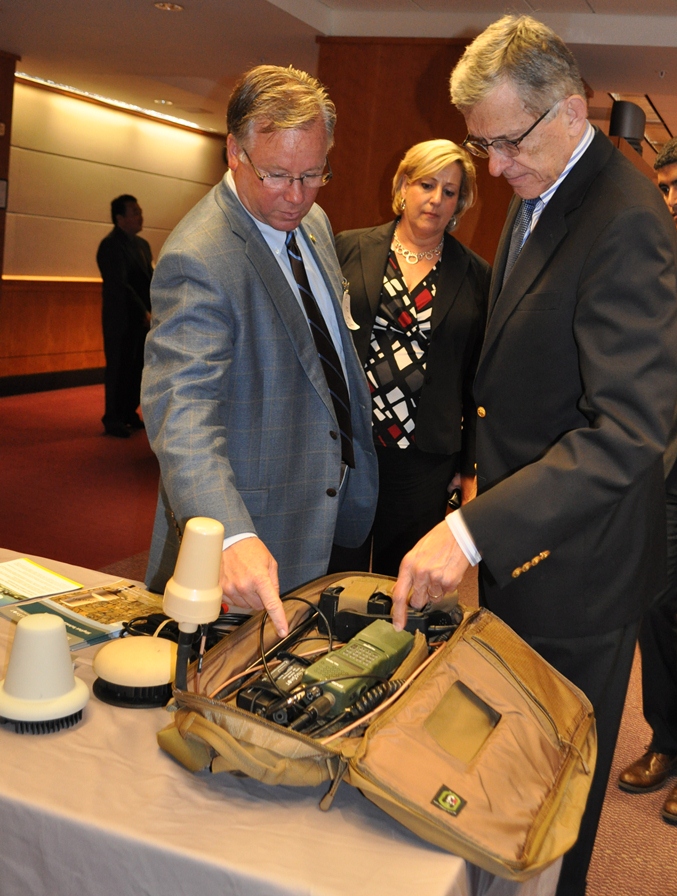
5.14.2014 Satellite Technology Demonstration

Chairman Tom Wheeler at the Satellite Technology Demonstration